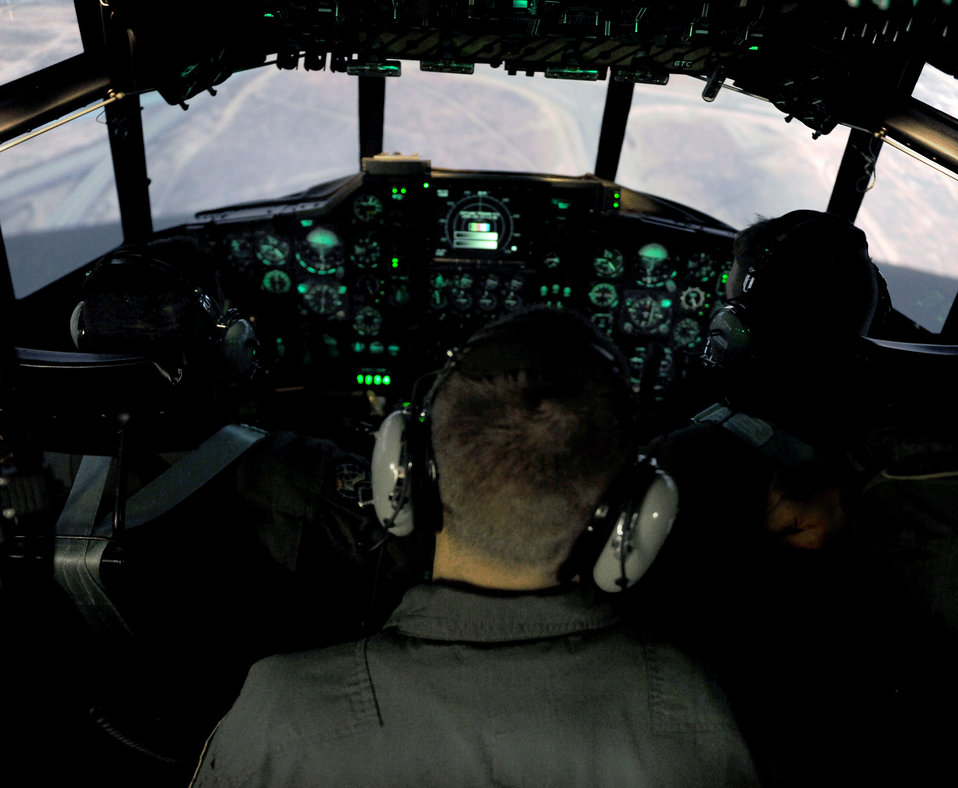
Flight simulator

Two pilots and a flight engineer fly inside the C-130 Hercules simulator during training Nov. 1, 2010, at Moody Air Force Base, Ga. Pilots, navigators, flight engineers and other crewmembers trained during the class as if on an actual mission.